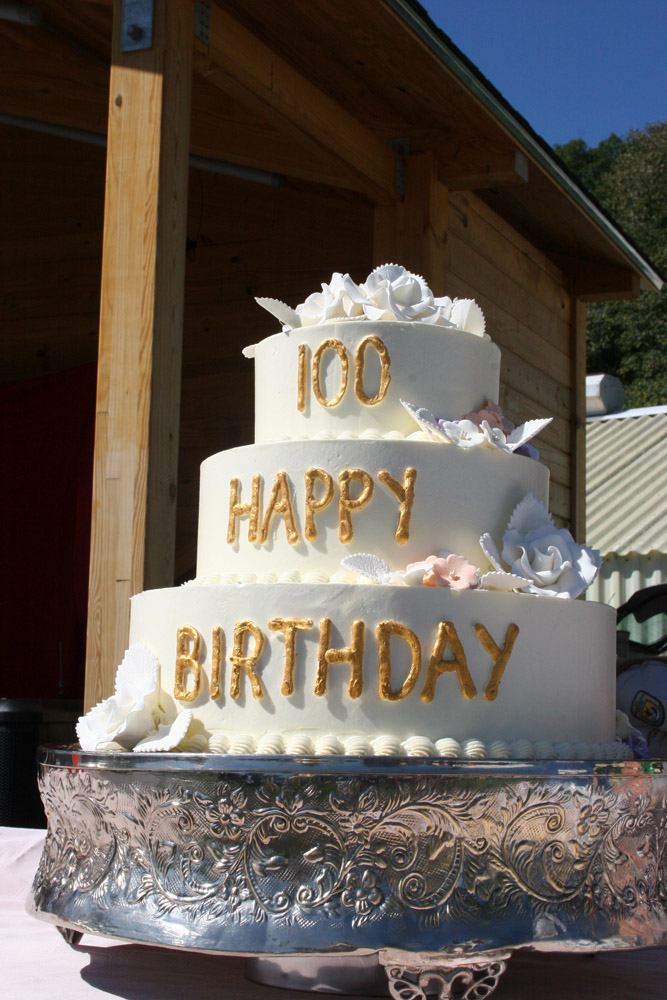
Freshwater Folk Festival

The 5th Annual Freshwater Folk Festival at White Sulphur Springs National Fish Hatchery in West Virginia.Credit: USFWS